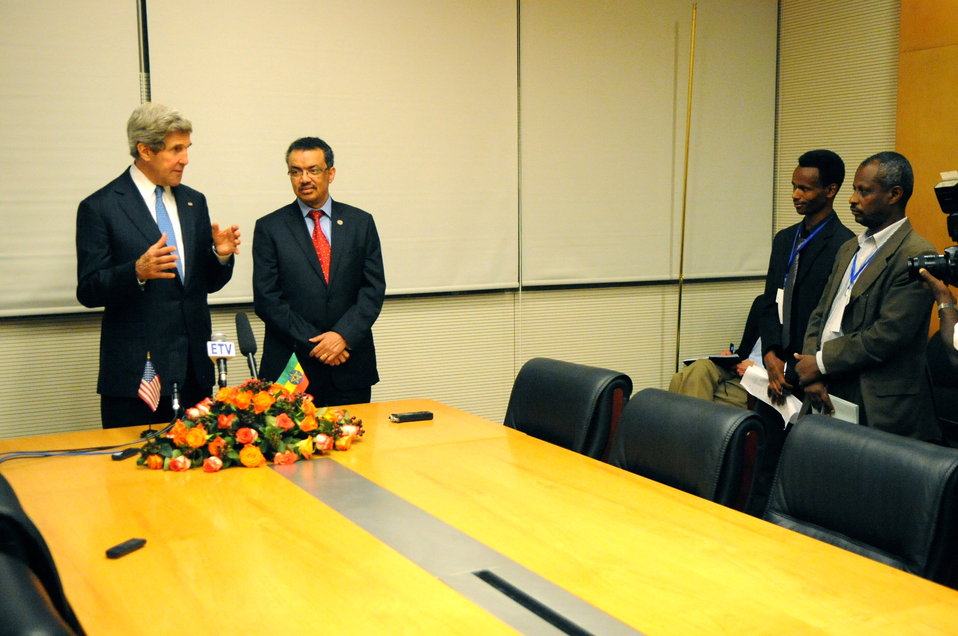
Secretary Kerry and Ethiopian Foreign Minister Adhanom Hold a News Conference in Addis Ababa

U.S. Secretary of State John Kerry takes a question from an African journalist, as the Secretary and Ethiopian Foreign Minister Tedros Adhanom hold a news conference at the 50th anniversary African Union Summit in Addis Ababa, Ethiopia, on May 25, 2013.